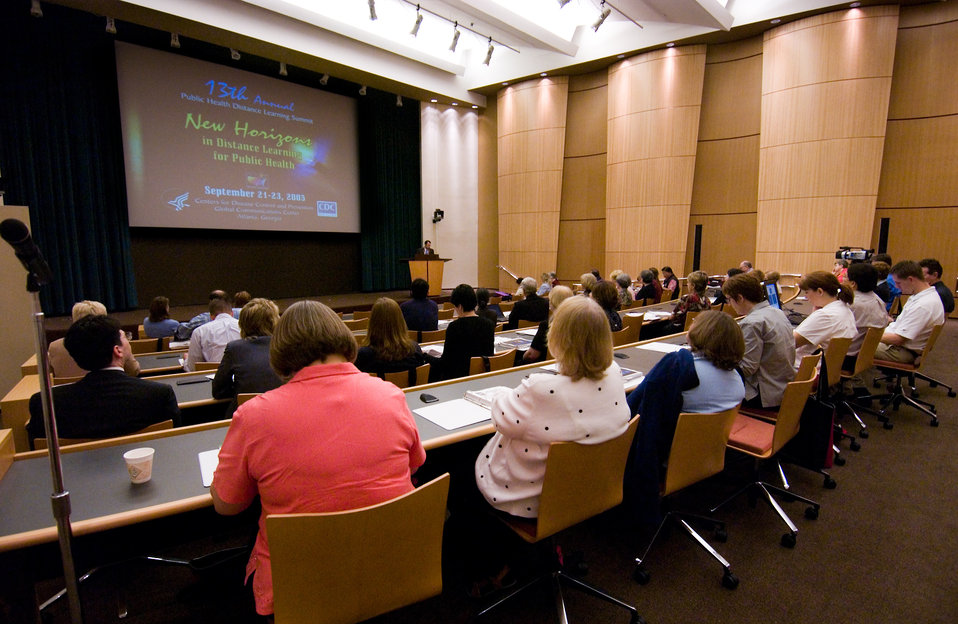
This photograph showed Distance Learning Coordinators (DLC) from the academic, clinical, governmental and non-governmental fields, while attending the 13th Annual Public Health Distance Learning Summit in September, 2005. The meeting was held on the Center for Disease Control's (CDC) Robal Campus in Atlanta, Georgia, at the new Tom Harkin Global Communications Center, otherwise known as Building 19.